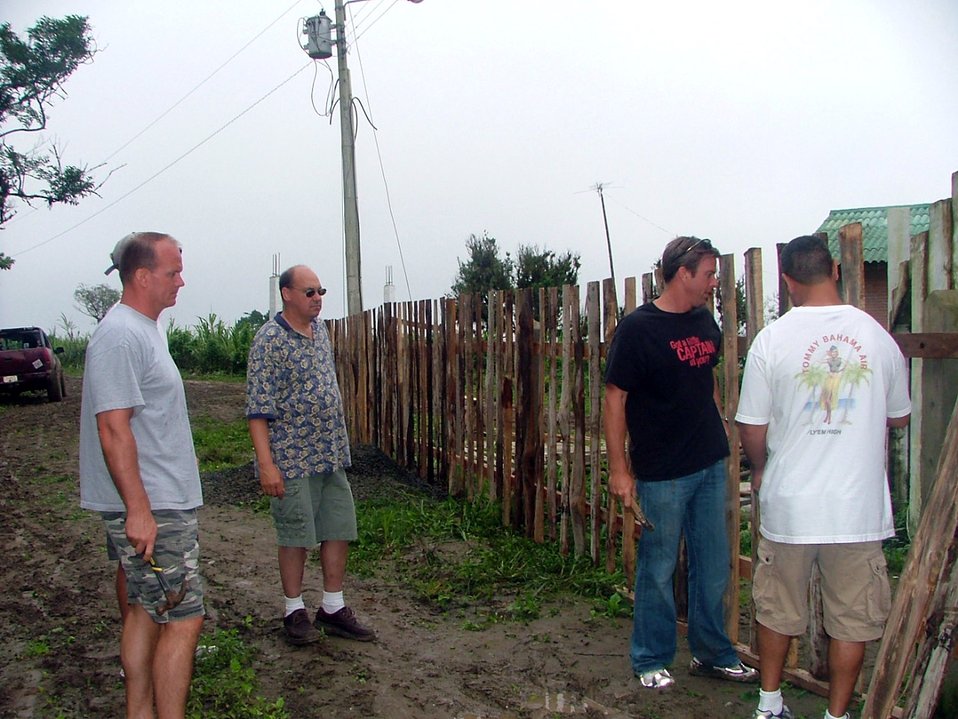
Airman support local community at Manta FOL

Lt. Col. Brent Dunn (left to right), Maj. Mark Anderson, Capt. Ernie Meeks and Maj. Scott Griesman from Forward Operating Location Manta, Ecuador, work together to build a fence Jul. 26 at Montanita Verde Orphanage. Airmen from Manta volunteer to undertake a variety of projects in the local community.